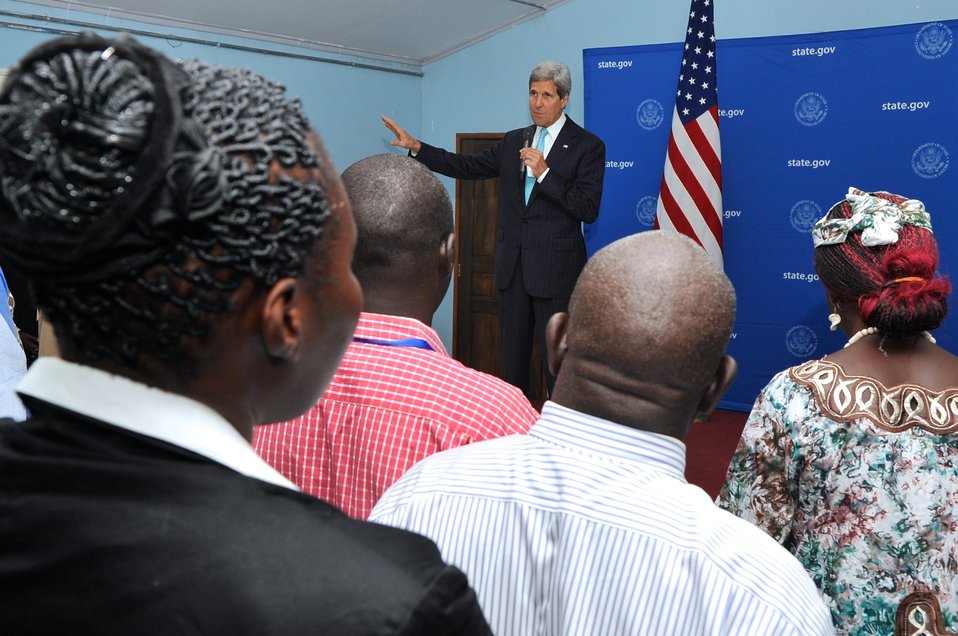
Local Staff at Embassy Juba Listens to Secretary Kerry Speak

Local residents who work at the U.S. Embassy in Juba, South Sudan, listen to U.S. Secretary of State John Kerry as he speaks to them in their compound cafeteria following his meeting with President Salva Kiir Mayardit in Juba on May 2, 2014.